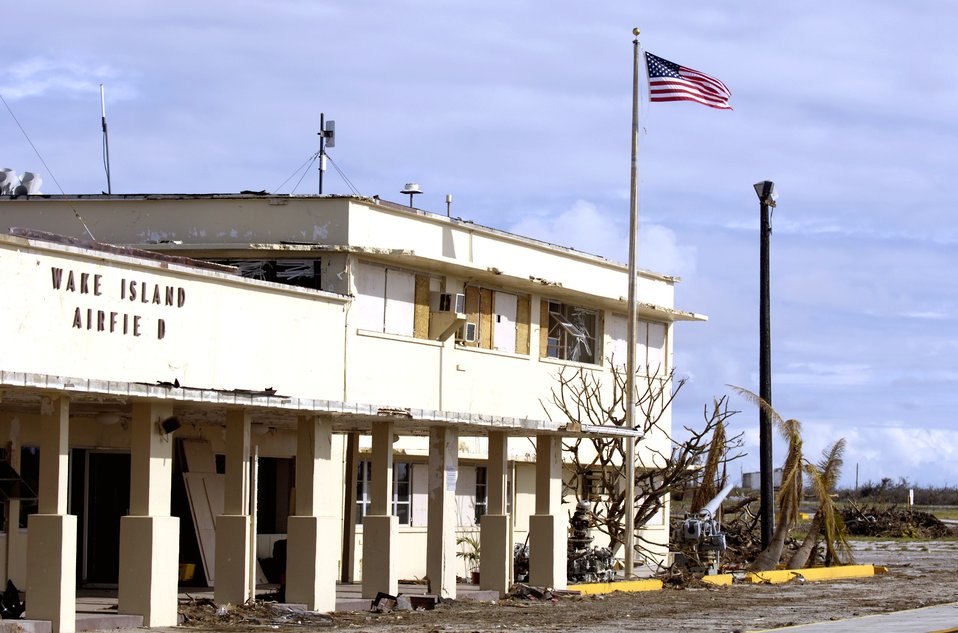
Teams fly to Wake Island to assess damage

Damage to the airfield operations building, dead trees and debris are visible signs of the destruction left by Super Typhoon Ioke on Wake Island after it hit Aug. 31.